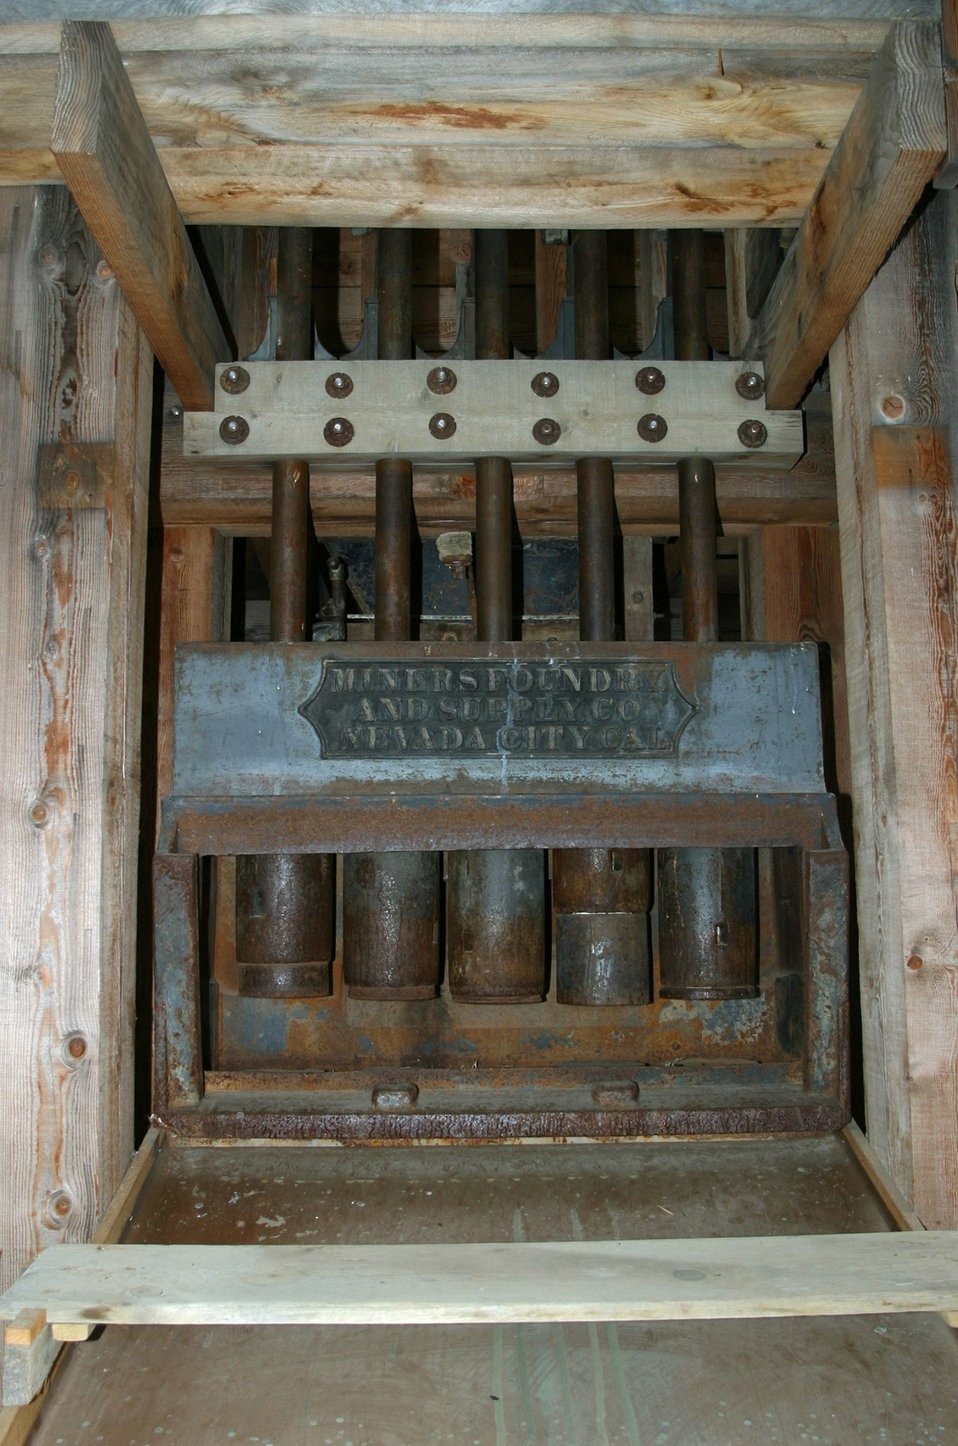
A replica of the Rabbit Mine 1926 stamp mill near Greenhorn in the Blue Mountains of eastern Oregon. It is used to interpret the importance of mining in western history, and the relationship of gold mining to the westward migration story.